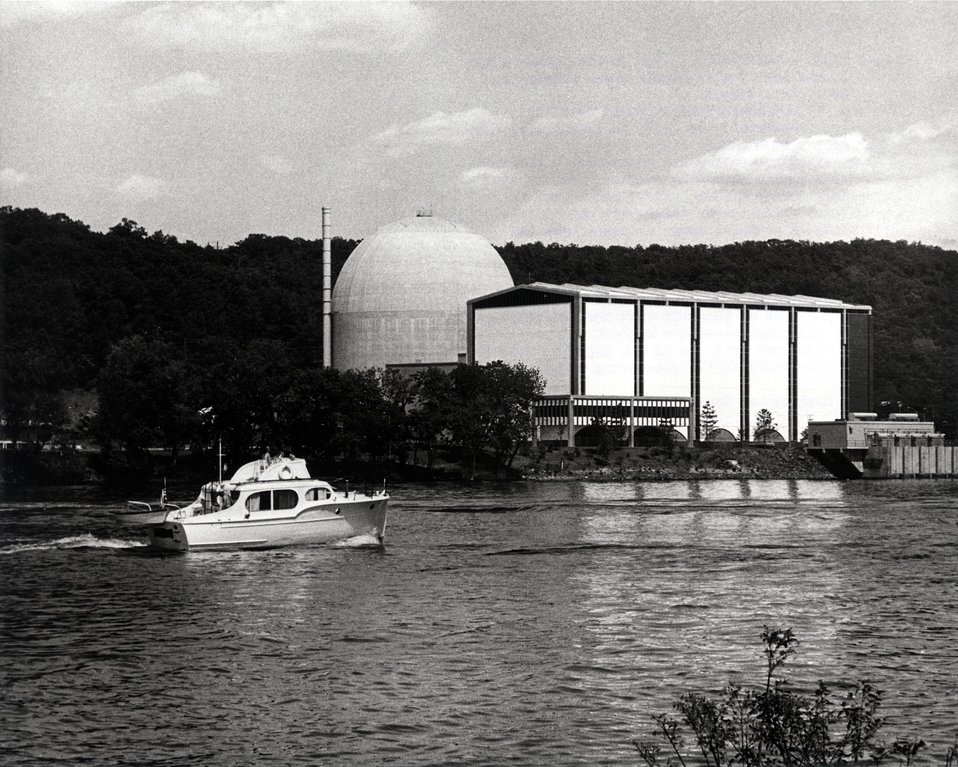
Haddam Neck.